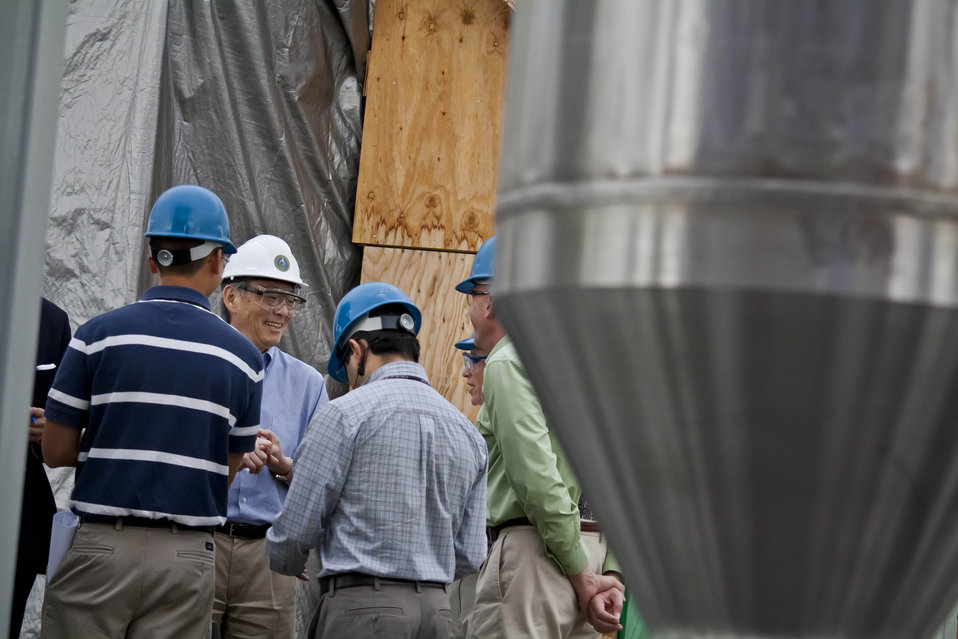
SECRETARY CHU AT HANFORD LSIT 2012

DOE Secretary Chu tours the Low-Scale Integrated Testing Facility (LSIT) at Hanford on July 14, 2012.